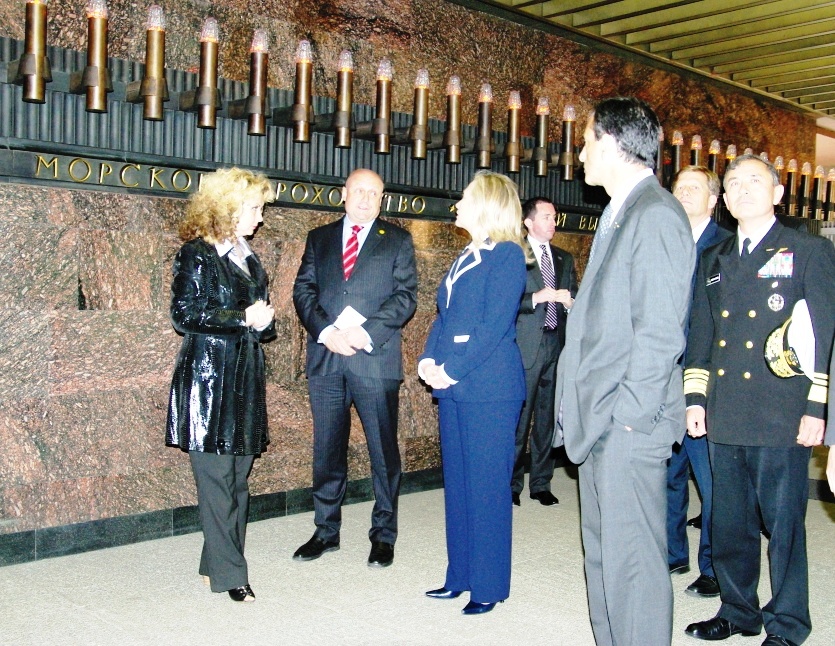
Secretary Clinton Tours the Museum

Chairman of the Federation Council of the Russian Federation Valentina Matviyenko provides U.S. Secretary of State Hillary Rodham Clinton a tour of the Catherine Palace in St. Petersburg, Russia, on June 28, 2012.